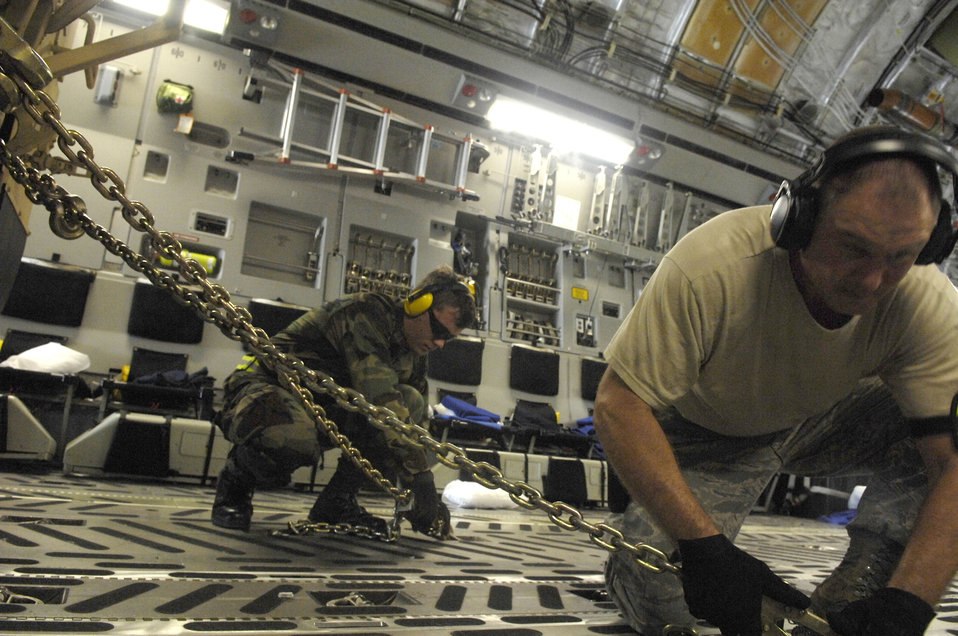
C-17 Reaches Across the Globe

Equipment operator U.S. Navy Petty Officer 2nd Class Cory Largent,a member of the 133rd Naval Mobil Construction Battalion out of Gulfport, Miss., and U.S. Air Force Master Sgt. Dave Henley, a ramp services supervisor for the 734th Air Mobility Squadron, secure the tiedown chains aboard a C-17 Globemaster III Dec. 28, 2008. The tiedowns are for a Mine Resistant Ambush Protected vehicle being transported to Bagram Airfield, Afghanistan. The C-17 crew started out at Hickam and this mission illustrates the global reach capabilities of the Air Force across the globe.